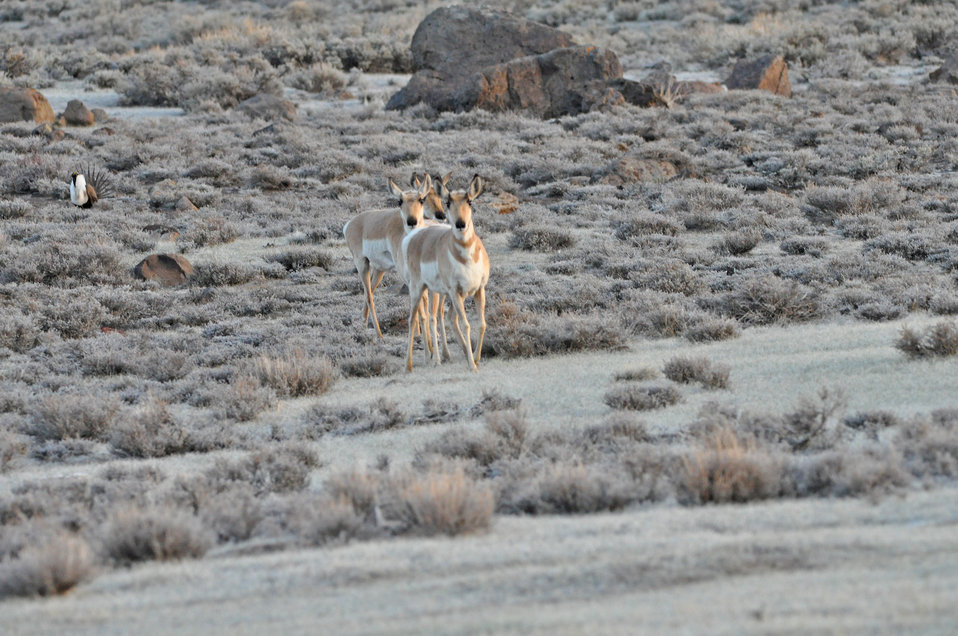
Pronghorn

Photo Credit: Jeannie Stafford/USFWS
Pronghorn (Antilocapra americana) are endemic to interior western and central North America. In North America they are commonly referred to as pronghorn antelope or simply antelope as it closely resembles the true antelopes of the Old World. They can run exceptionally fast and they are often cited as the second-fastest land animal, second only to the cheetah. These females were photographed at a greater sage-grouse lek near Bridgeport, CA.